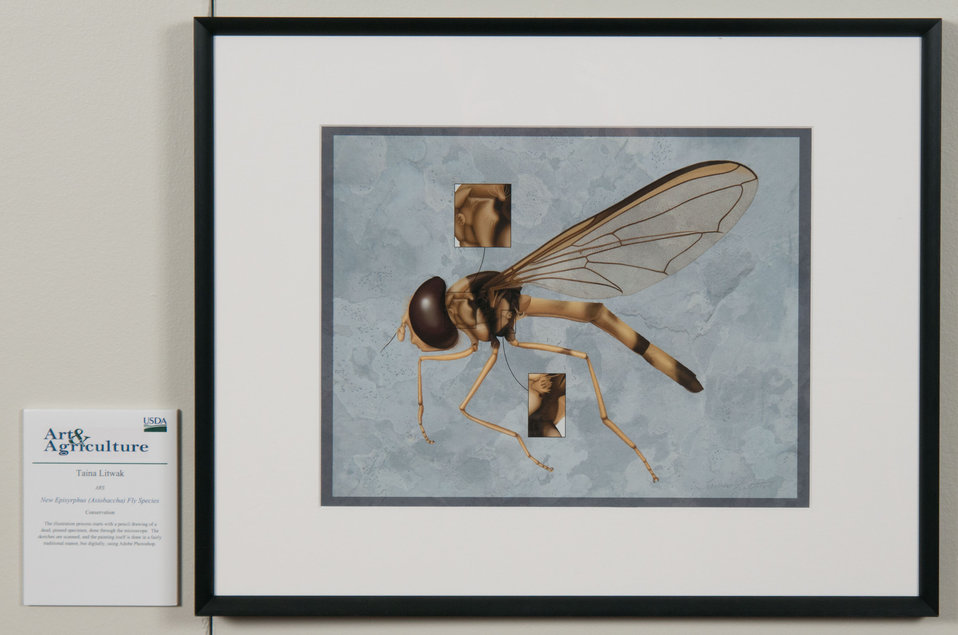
Online Viewer's Choice entries of the 2013 Art & Agriculture, Tuesday, July 9, 2013, in the South Building, Washington, D.C. Themes were expressed by employees from across the department and the contest was open to full-time and part-time USDA employees. Winning artwork will be displayed till the end of the year. U.S. Artistic expression is a creative outlet that is vital for an individual to grow and develop.